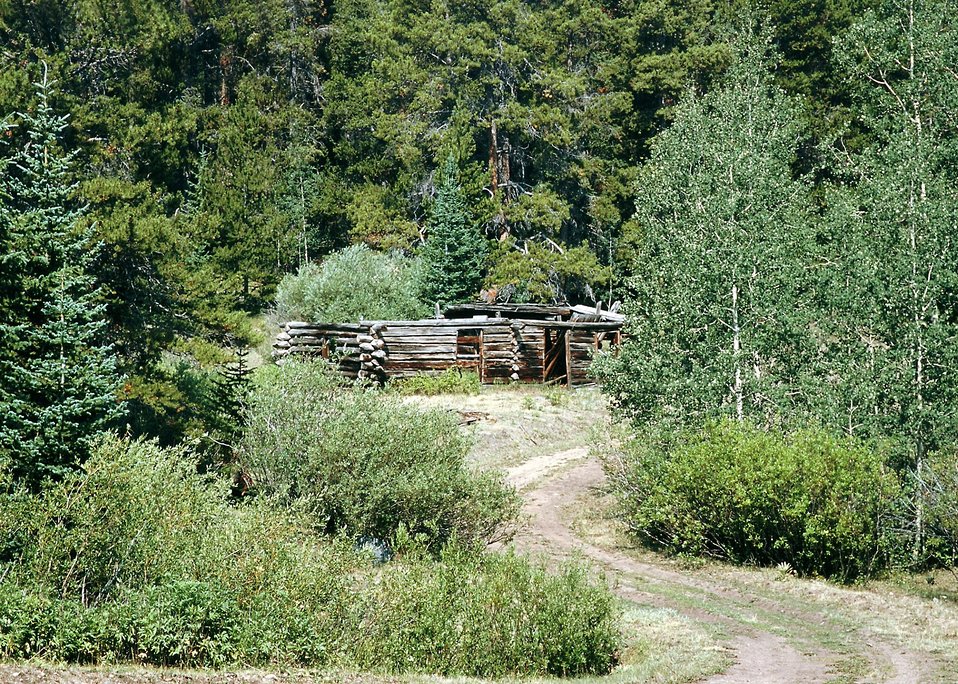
Mitchell Old Cabin Place